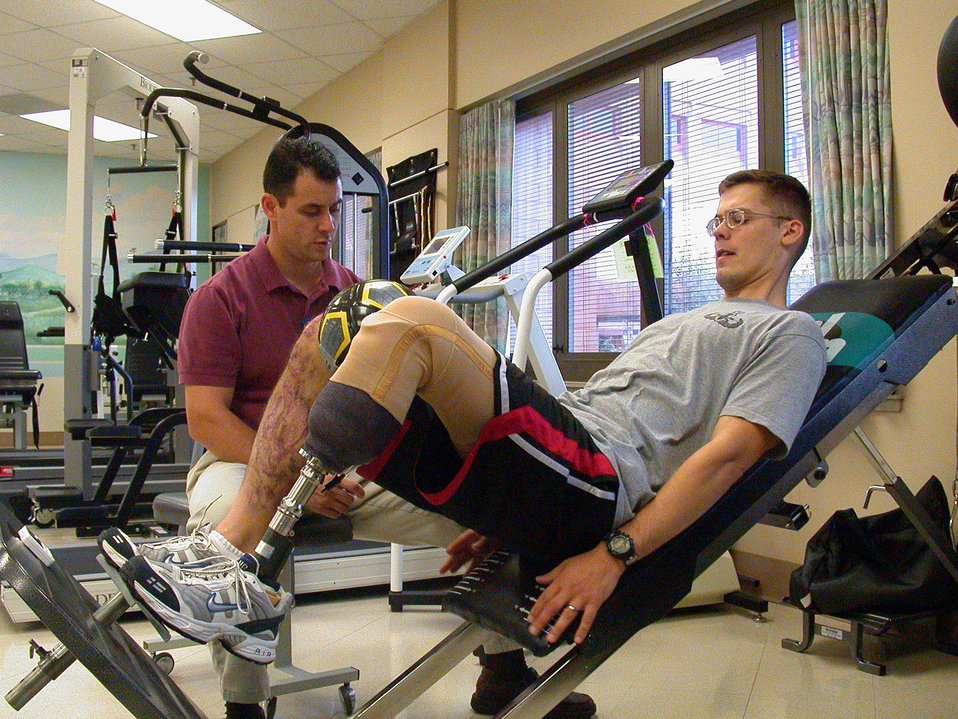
Mine explosion puts two Airmen on different paths to recovery

Staff Sgt. Chris Ramakka goes through physical therapy at Brooke Army Medical Center in San Antonio.